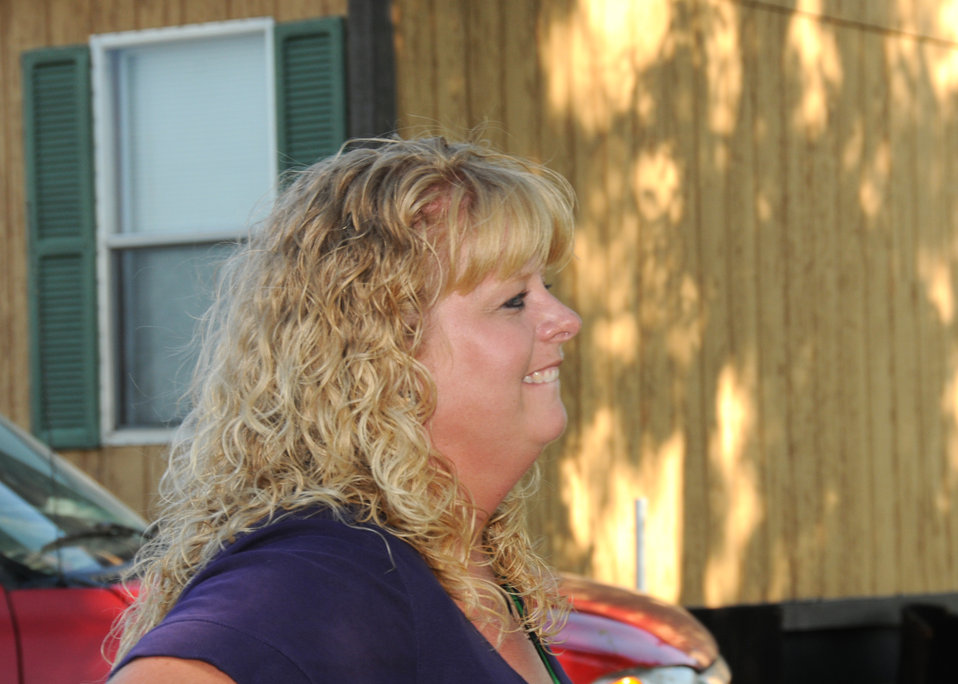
Steve Burris's wife, Kathy, outside their modular home on the farm in McLoud, Oklahoma.